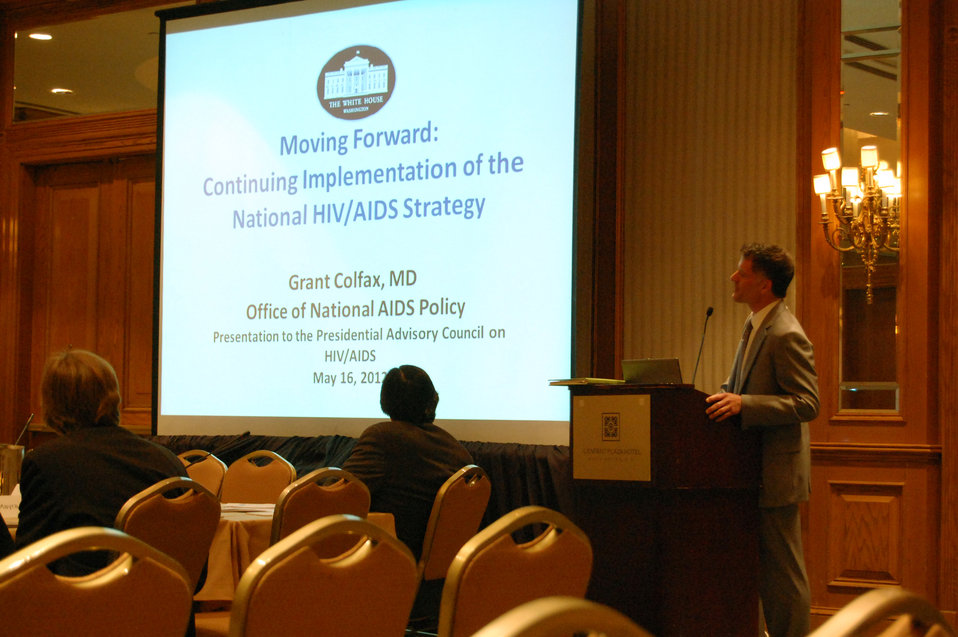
PACHA conf041